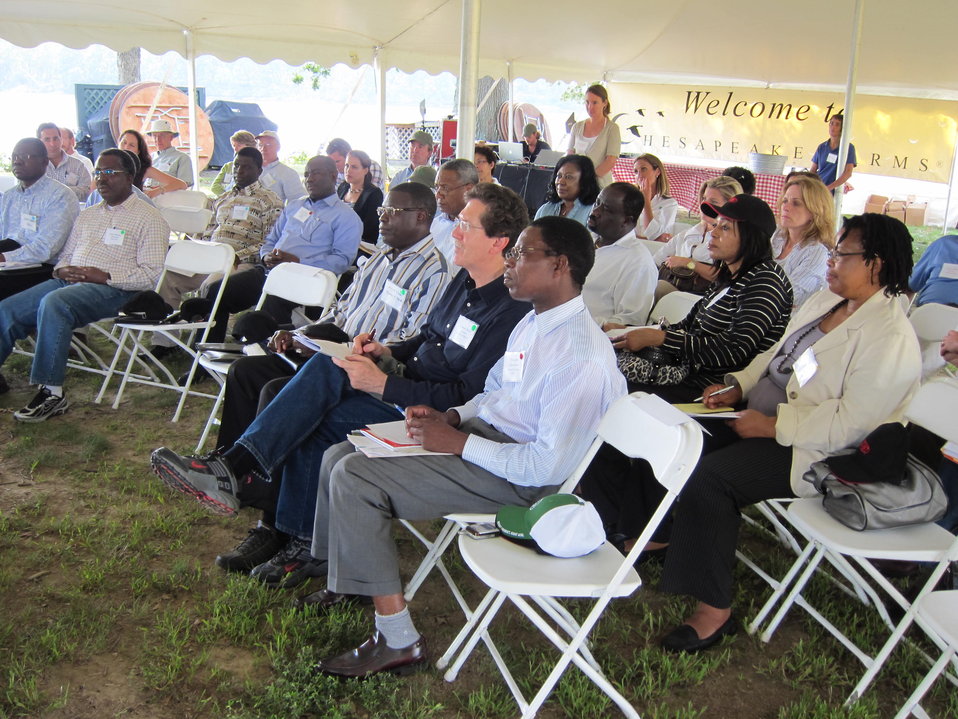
Assistant Secretary Fernandez Delivers Remarks on 'The Role of Biotechnology in Advancing African Agriculture'

Assistant Secretary of State for Economic, Energy and Business Affairs Jose Fernandez delivers remarks on 'The Role of Biotechnology in Advancing African Agriculture,” at Chesapeake Farms in Maryland on September 14, 2011.